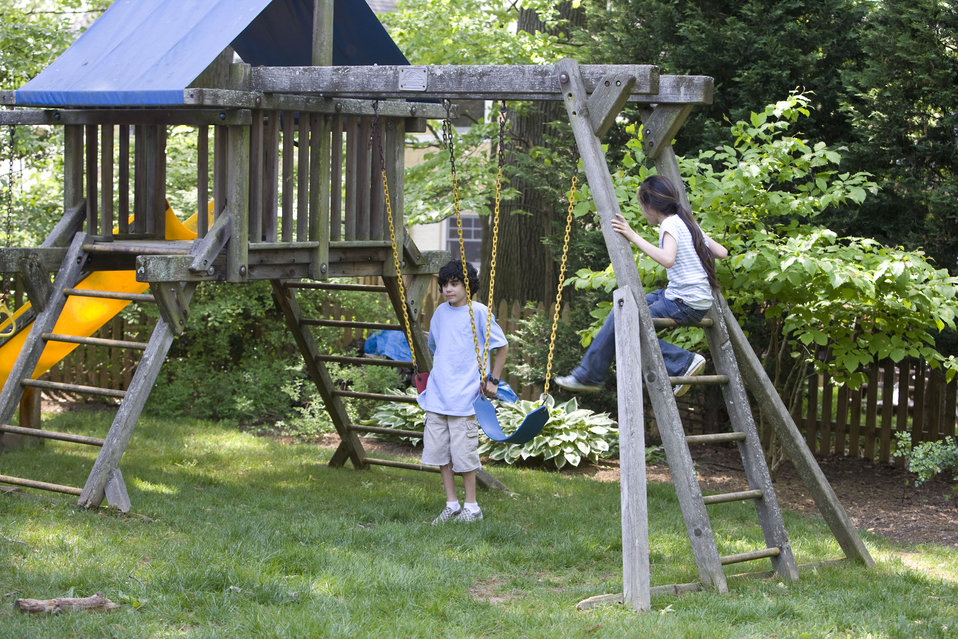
Children love playing outside, and these children were thoroughly enjoying their wooden swing set, and all were having fun in the fresh outdoor air, and the beautiful weather. It's important to note that older wooden playsets may have been treated with arsenic and/or creosote, and therefore, parents need to know if these chemicals were used in their manufacture.